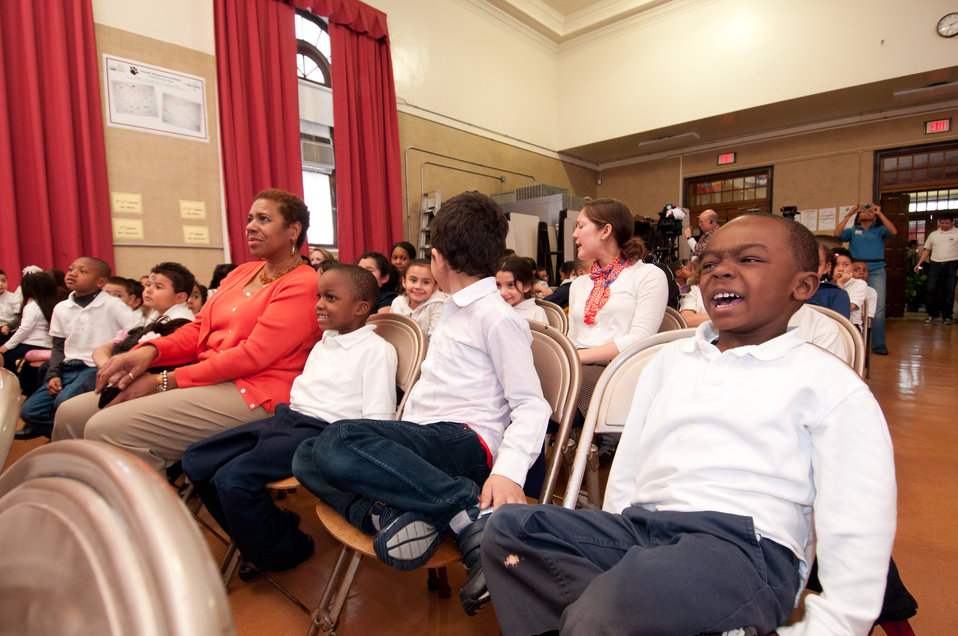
Students were eager to see the People’s Garden team for W. B. Powell Elementary School, (consisting of the Washington Capitols, U.S. Department of Agriculture and D.C. Public Schools in Washington, D.C.) who revealed to 289 parents and students, the School Garden Design Concept on Thursday, March 10, 2011.